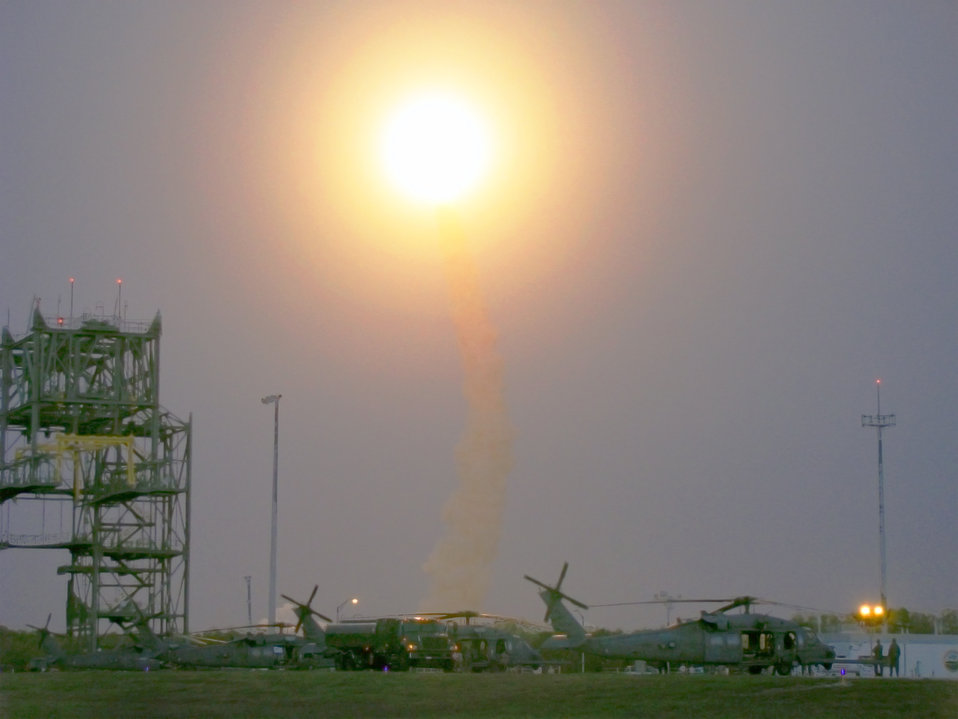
Rescue Airmen support shuttle launch

Space Shuttle Discovery hurtles through the stratosphere under the watchful eyes of 920th Rescue Wing helicopter crewmembers March 15 at Kennedy Space Center, Fla. The Airmen of the 920th RQW provide first-response, emergency medical and search-and-rescue support for all NASA shuttle and rocket launches.